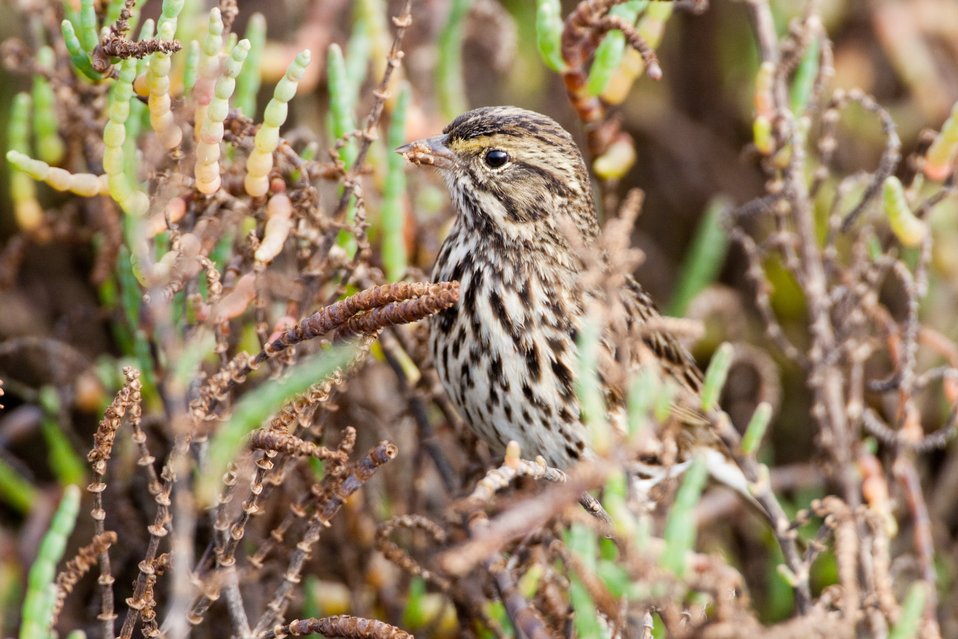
Belding's Savannah sparrow (adult)

The Belding's is very similar to the large-billed sparrow populations, however it has darker and heavier blackish streaking overall. It is a State Endangered bird, and frequents the marshes of both the Tijuana Slough NWR and San Diego Bay NWR.